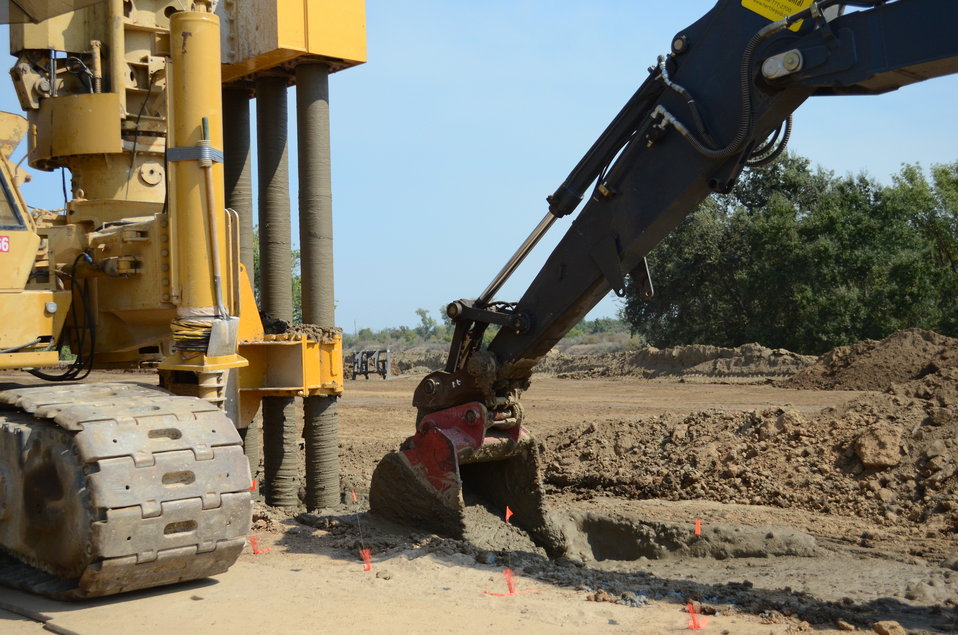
Sutter Basin Feasibility Study Nears Final Milestone

130821-A-ZW314-007: Slurry wall construction continues Aug. 21, 2013 at Shanghai Bend in Yuba City, Calif., courtesy of Sutter Buttes Flood Control Agency and the state of California. This work is part of the U.S. Army Corps of Engineers Sacramento District's recommended plan for the Sutter Basin Feasibility Study. The study will detail the federal government’s role in the project, which will improve more than 40 miles of levee along the Feather River. The study is nearing its final milestone of a Civil Works Review Board – the Corps’ final review before the plan goes to Congress for consideration.